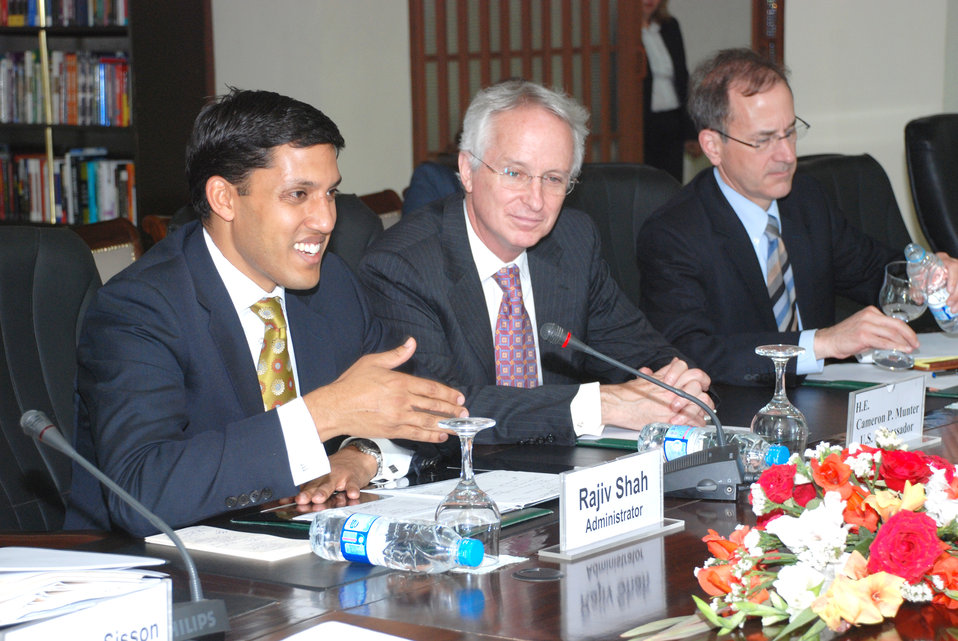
USAID and Pakistan Working Together to Promote Growth, Prosperity at Islamabad on April 13, 2012

Dr. Rajiv Shah (USAID) met with Finance Minister Hafeez Shaikh at the Ministry of Finance. The two discussed the important role economic assistance brings to the bilateral relationship, and how U.S. civilian assistance can create jobs and raise incomes for more Pakistanis.